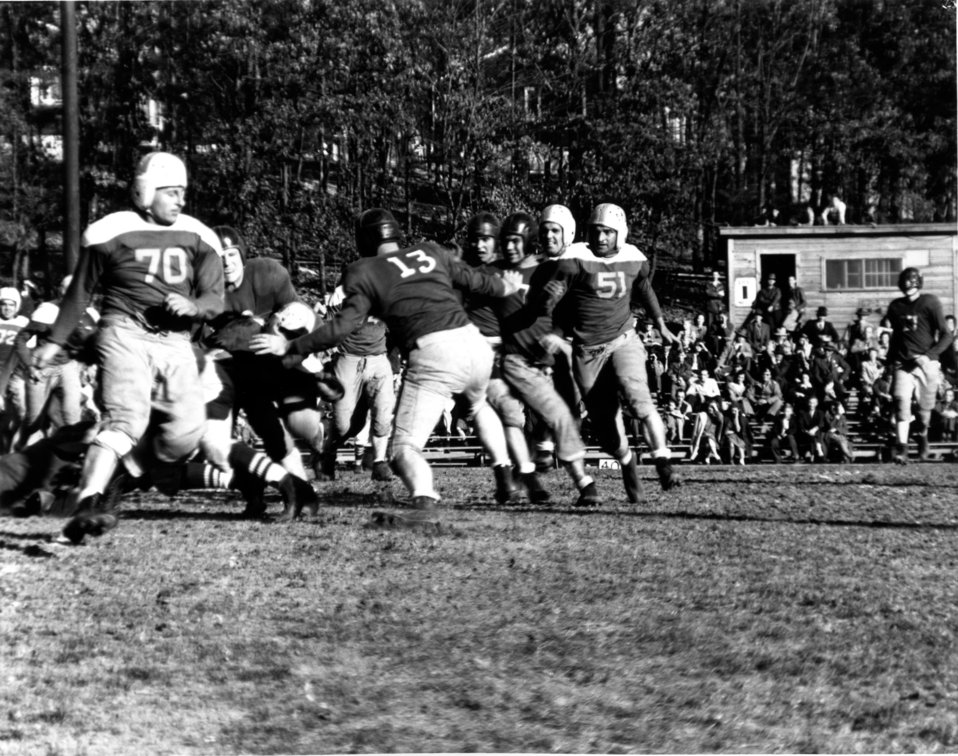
Recreation at Oak Ridge